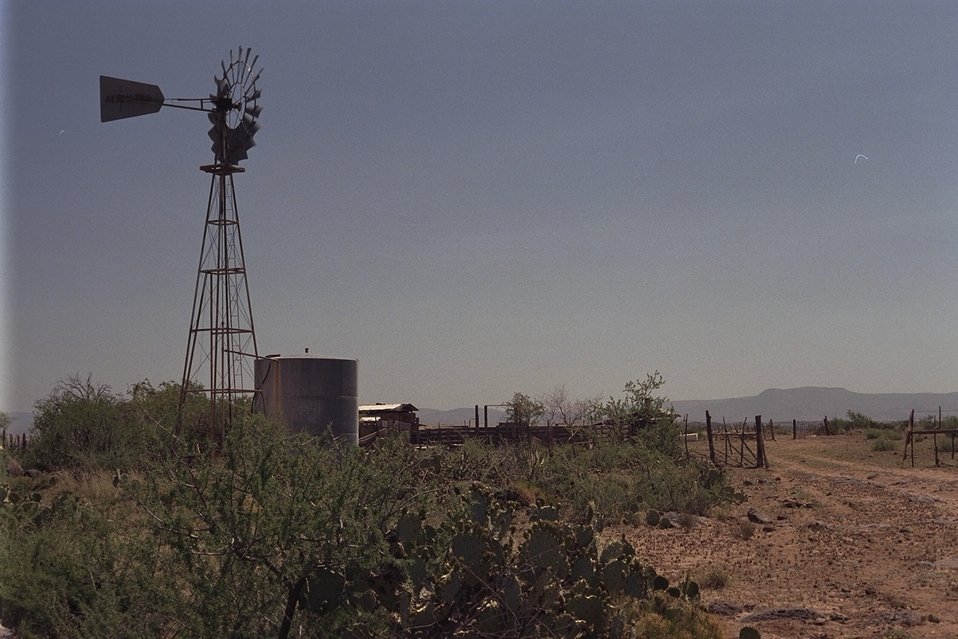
A windmill in the Agua Fria National Monument area.